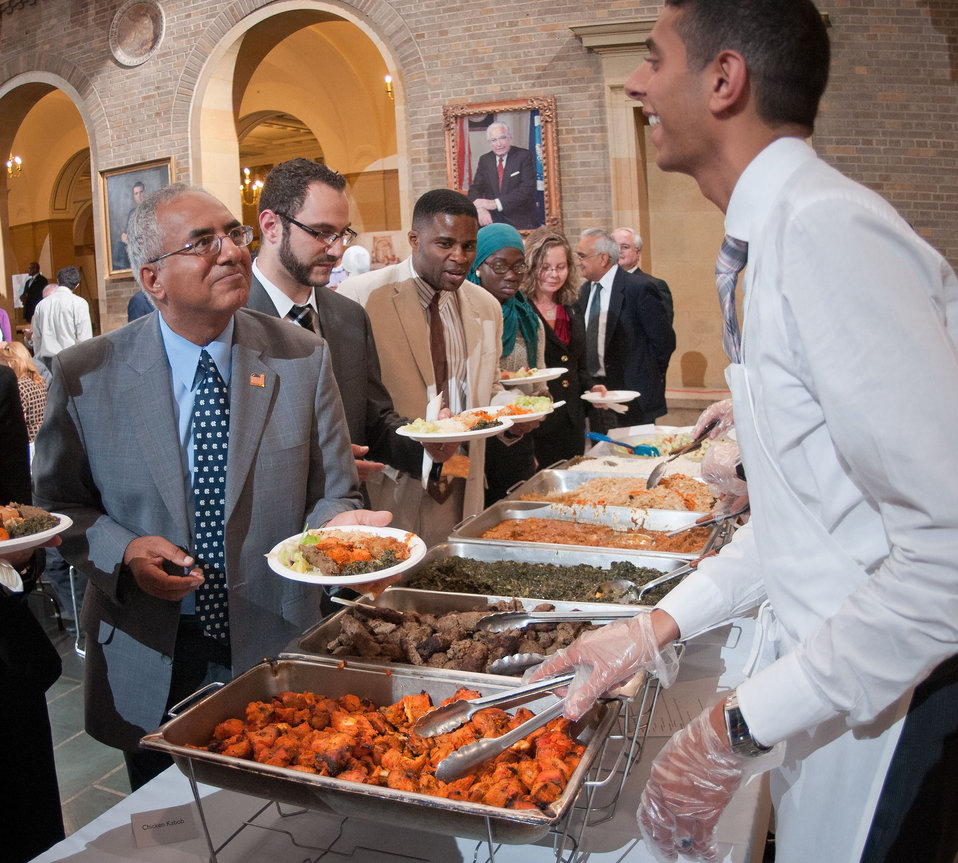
Long, fast lines moved through the buffet, after sunset, during the Iftar celebration, co-sponsored by the U.S. Department of Agriculture, U.S. Agency for International Development (USAID) and Islamic Relief USA, on Tuesday, August 7, 2012, an the USDA Whitten Building, in Washington, D.C. Ramadan is the month of fasting, intensive prayer, sacrifice and worship for Muslims around the world. Throughout this month, Muslims fast during the day, abstaining from consuming food from dawn to dusk and using this time to purify spiritually. Fasting reminds Muslims of the poverty and hunger suffered by many in the United States and worldwide. It is a connection with those who are hungry not through devotion, but through the many global factors that lead to hunger and famine. Iftar is the meal at which Muslims break their fast at sunset, usually by eating dates, according to the Prophetic tradition.